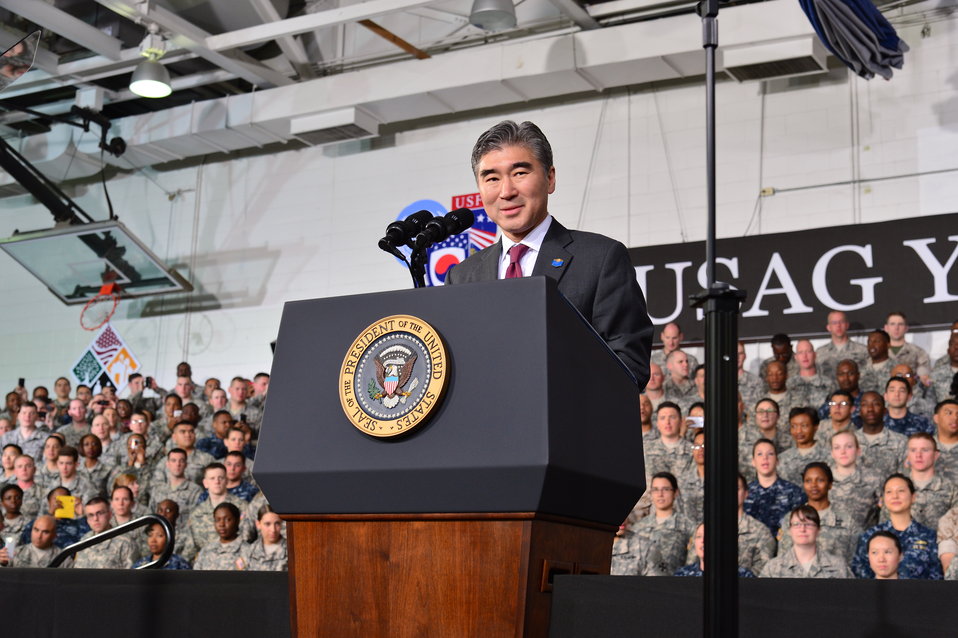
Ambassador Kim Delivers Remarks at a Combined Forces Command Briefing

U.S. Ambassador to the Republic of Korea Sung Kim delivers remarks at a Combined Forces Command Briefing at Yongsan Garrison in Seoul, Republic of Korea on April 26, 2014.